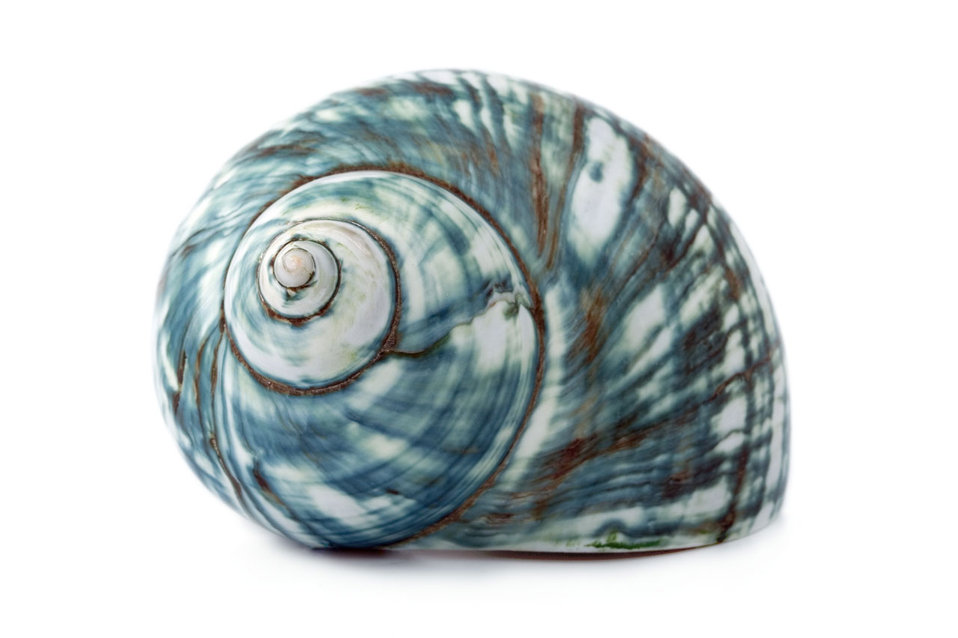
Blue sea shell on white background.